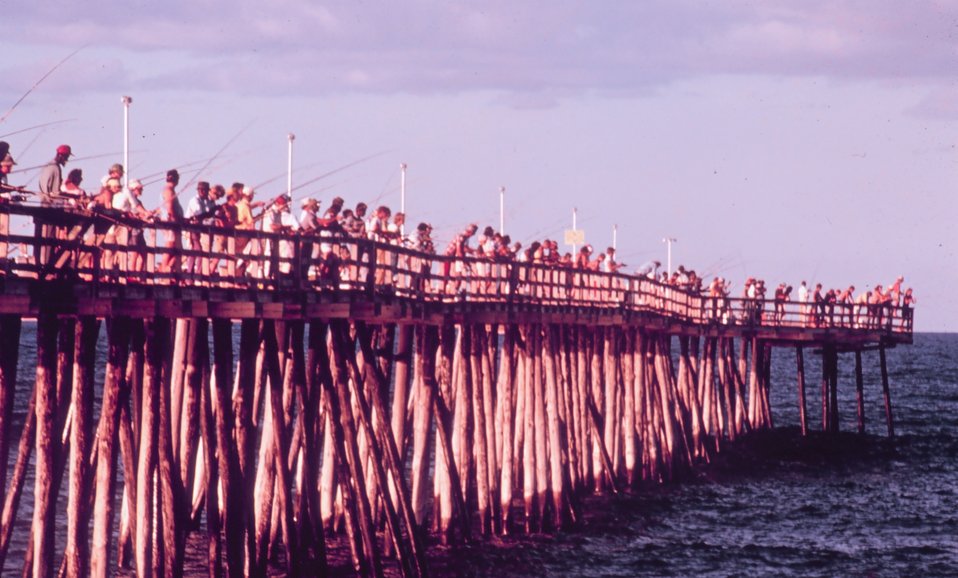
The fishing pier at Kitty Hawk